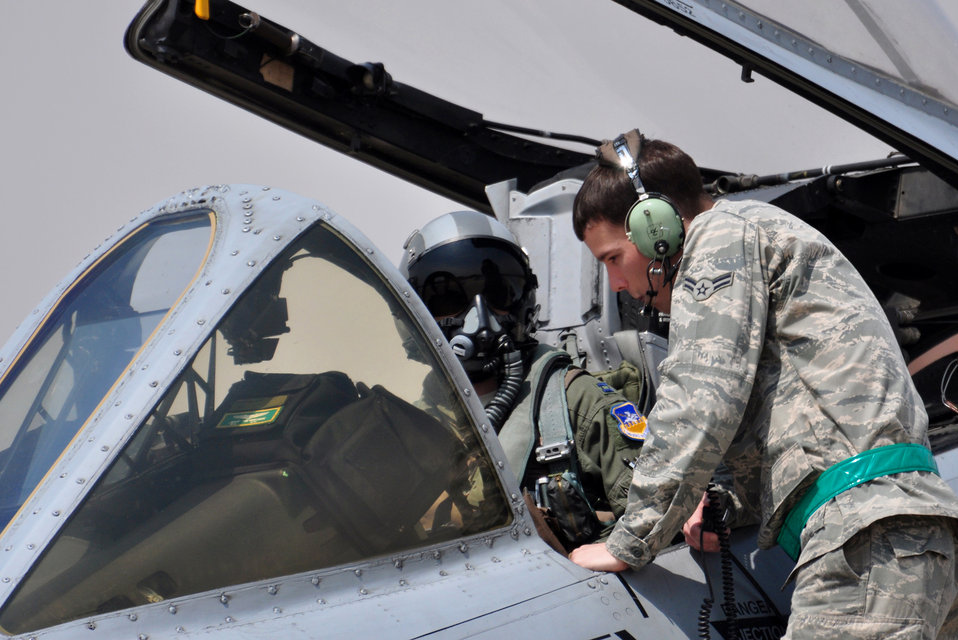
A-10s return

A maintainer speaks with an A-10 Thunderbolt II pilot after landing April 21, 2011, at Osan Air Base, South Korea.